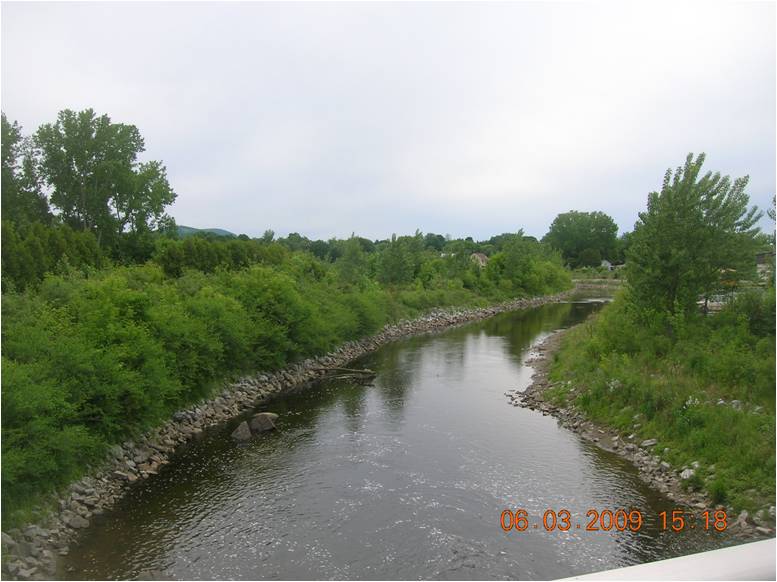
(Earlier photo) August 2009, View of river's recovery 7 years after cleanup, Pittsfield, MA

In the same area of the '1.5 mile reach' of the river, this photo shows the view from Lyman Street, 7 years after the cleanup.